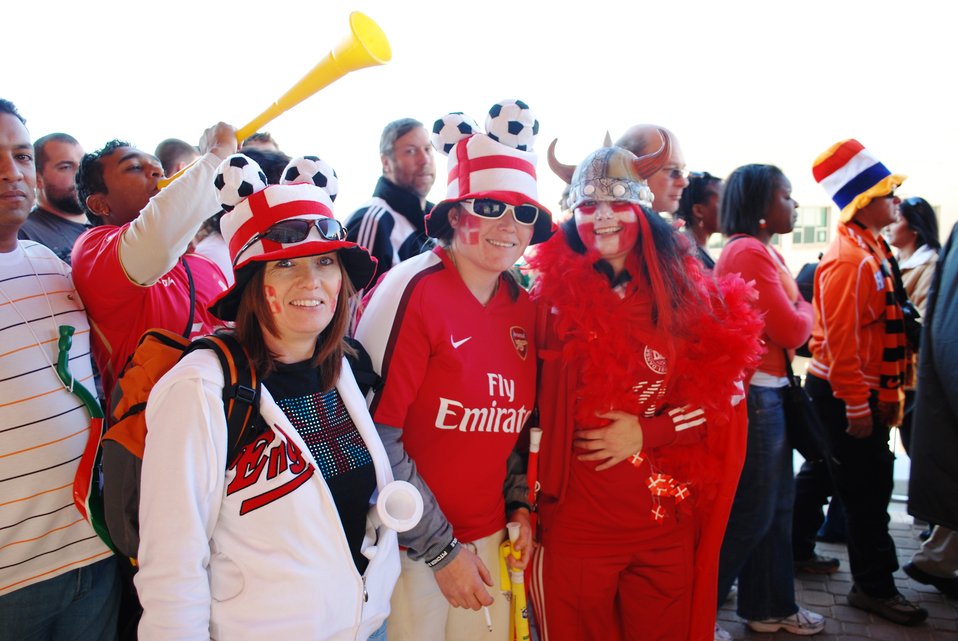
2010 0616 English fans

English fans pose for a photo at the U.S. vs. England World Cup soccer match at Royal Bafokeng Stadium in Rustenburg, South Africa, on June 12, 2010.